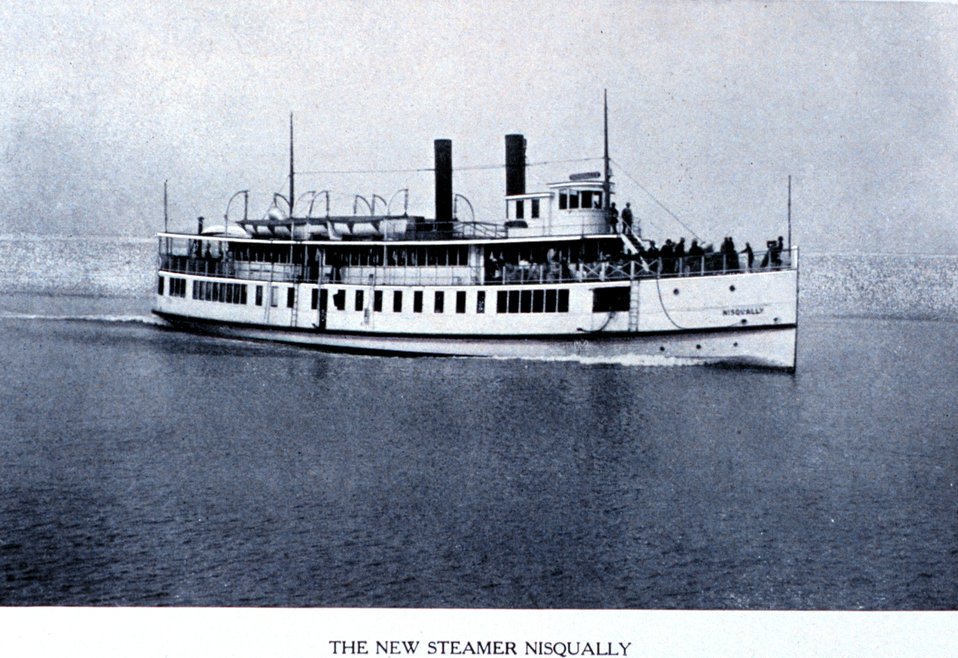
'The New Steamer NISQUALLY'. In: 'Puget Sound and Western Washington Cities-Towns Scenery', by Robert A. Reid, Robert A. Reid Publisher, Seattle, 1912. P. 32.